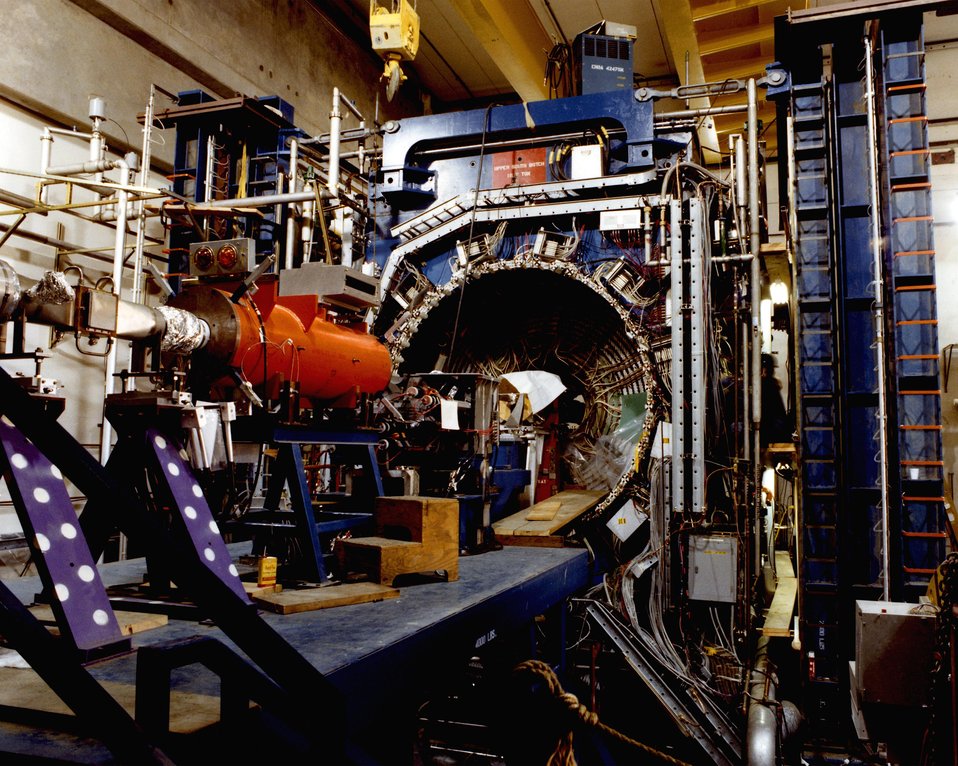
THE MARK II DETECTOR INSTALLED AT PEP WITHOUT THE END DOORS AND SHOWING DRIFT CHAMBER, TIME/FLIGHT SYSTEM AND BEAM LINE.

THE POSITRON-ELECTRON PROJECT (PEP) IS A JOINT UNDERTAKING OF STANFORD LINEAR ACCELERATOR CENTER (SLAC) AND THE LAWRENCE BERKELEY LABORATORY (LBL). THE PEP MACHINE IS DESIGNED TO STORE BEAMS OF ELECTRONS AND POSITRONS CIRCULATING IN OPPOSITE DIRECTIONS AT SINGLE-BEAM ENERGIES BETWEEN 4 GEV AND 18 GEV. THE SOURCE OF THE BEAMS WILL BE THE PRESENT SLAC ACCELERATOR. THE COUNTER-ROTATING BEAMS OF ELECTRONS AND POSITRONS WILL COLLIDE WITH EACH OTHER AT SIX POINTS IN THE MACHINE. THESE COLLISION OR BEAM-INTERACTION POINTS WILL BE USED FOR HIGH-ENERGY PHYSICS EXPERIMENTS.